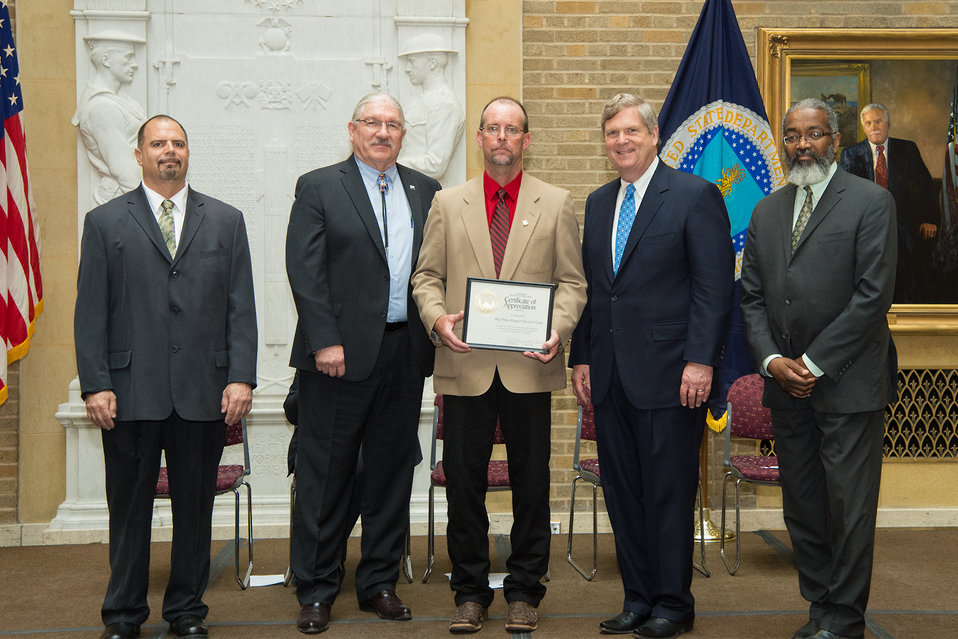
U.S. Department of Agriculture (USDA) Forest Service (FS) Arkansas Kendal Sloan receives the Unsung Hero Award on behalf of the Big Piney Ranger District, Arkansas from USDA’s Organization of Professional Employees President (OPEDA) Louis Iacoletti, USDA Natural Resources and Environment (NRE) Deputy Under Secretary Arthur “Butch” Blazer, Agriculture Secretary Tom Vilsack and USDA Assistant Secretary for Administration Dr. Gregory Parham at USDA in Washington, D.C. on Wednesday, May 7, 2014.